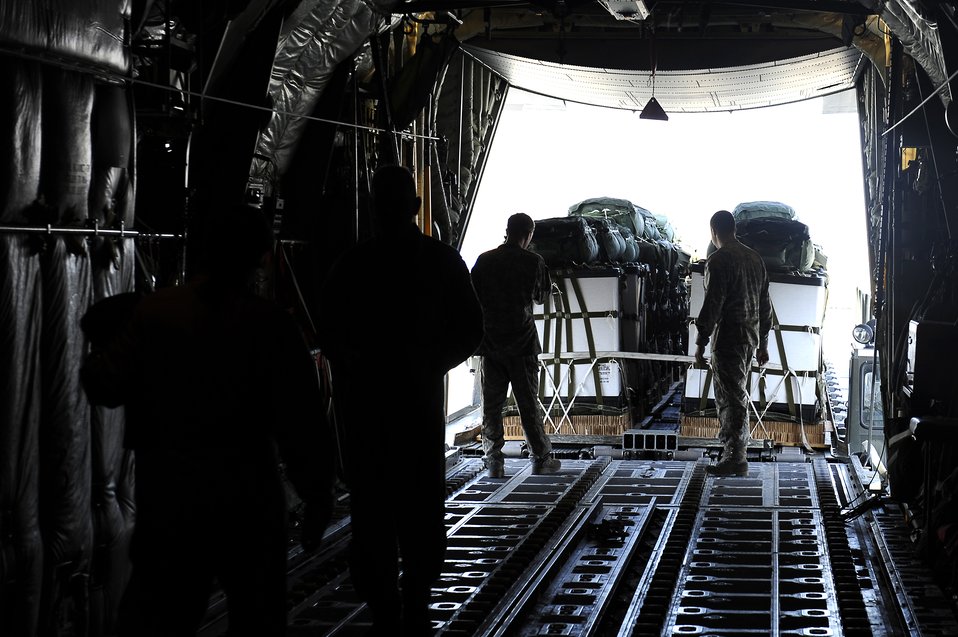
C-130J delivers supplies over Afghanistan

A C-130J Super Hercules is loaded for an airdrop mission at Bagram Airfield, Afghanistan, March 2, 2010.